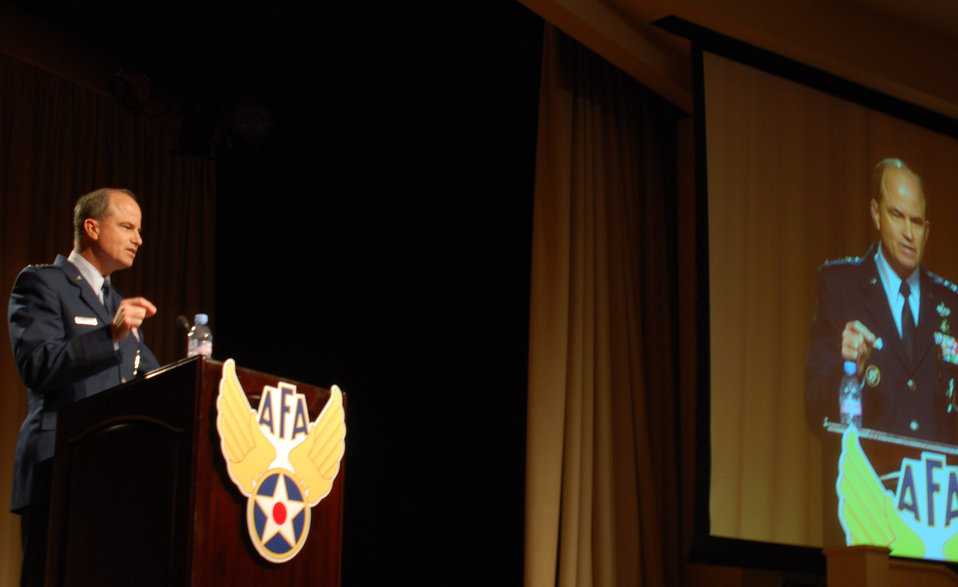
Air Force leaders speak at 2009 Global Warfare Symposium

Gen. Kevin P. Chilton addresses the challenges of 21st century warfare during the 2009 Air Force Association Global Warfare Symposium Nov. 19, 2009, in Los Angeles. Senior leaders addressed such issues as space, cyberspace and deterrence to Airmen, civilians and industry partners. General Chilton is the commander of U.S. Strategic Command.